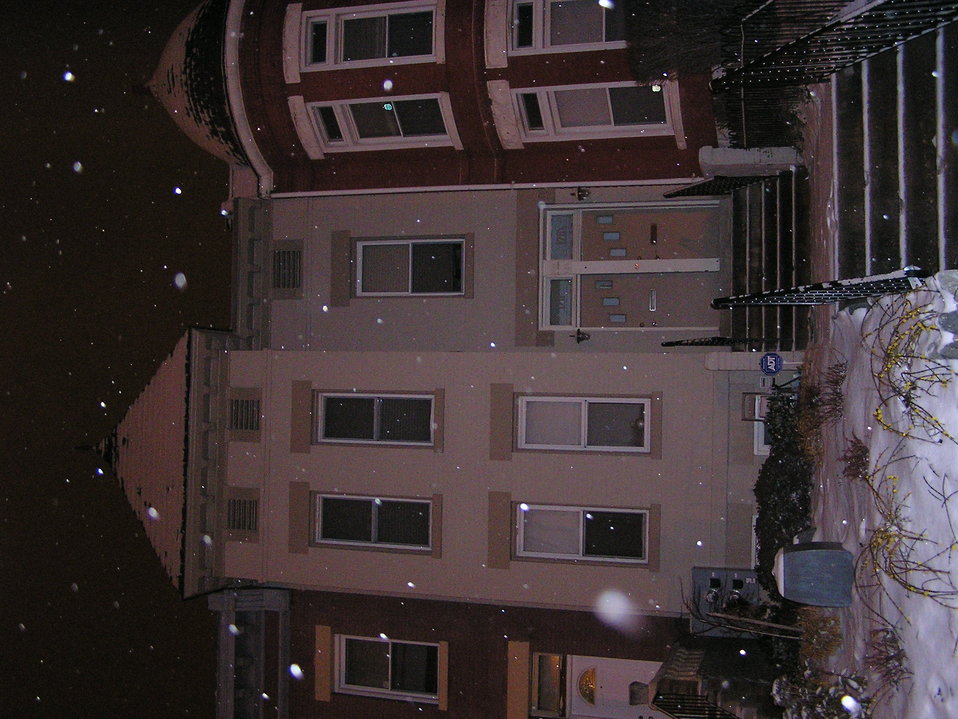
This is a photo of the row house where I live on R St NE in the Eckington neighborhood of Washington, DC. Taken during a rare DC snowstorm!